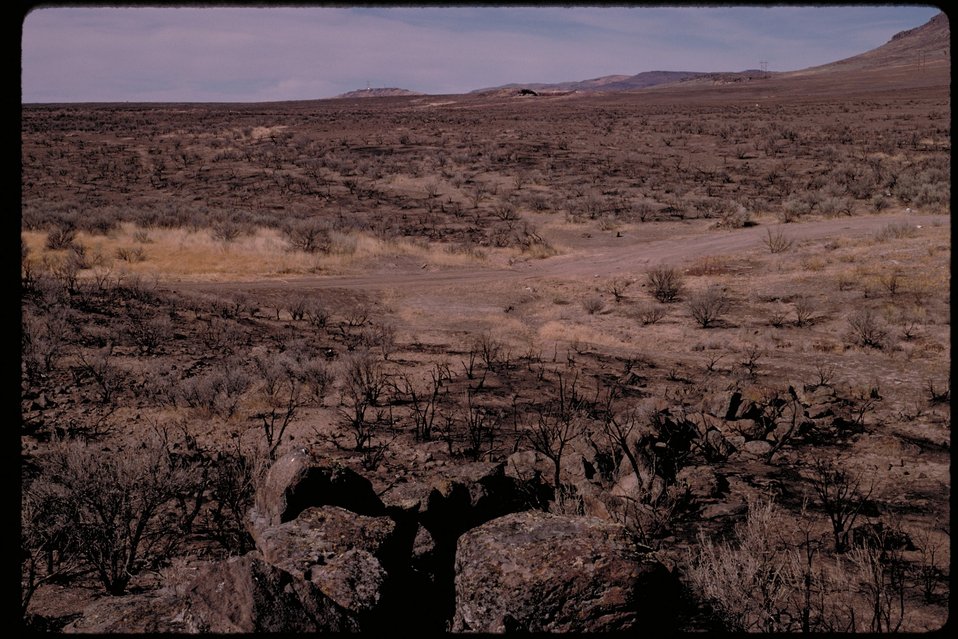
Oregon Trail Rock wall near Teapot Dome Lower Snake River District